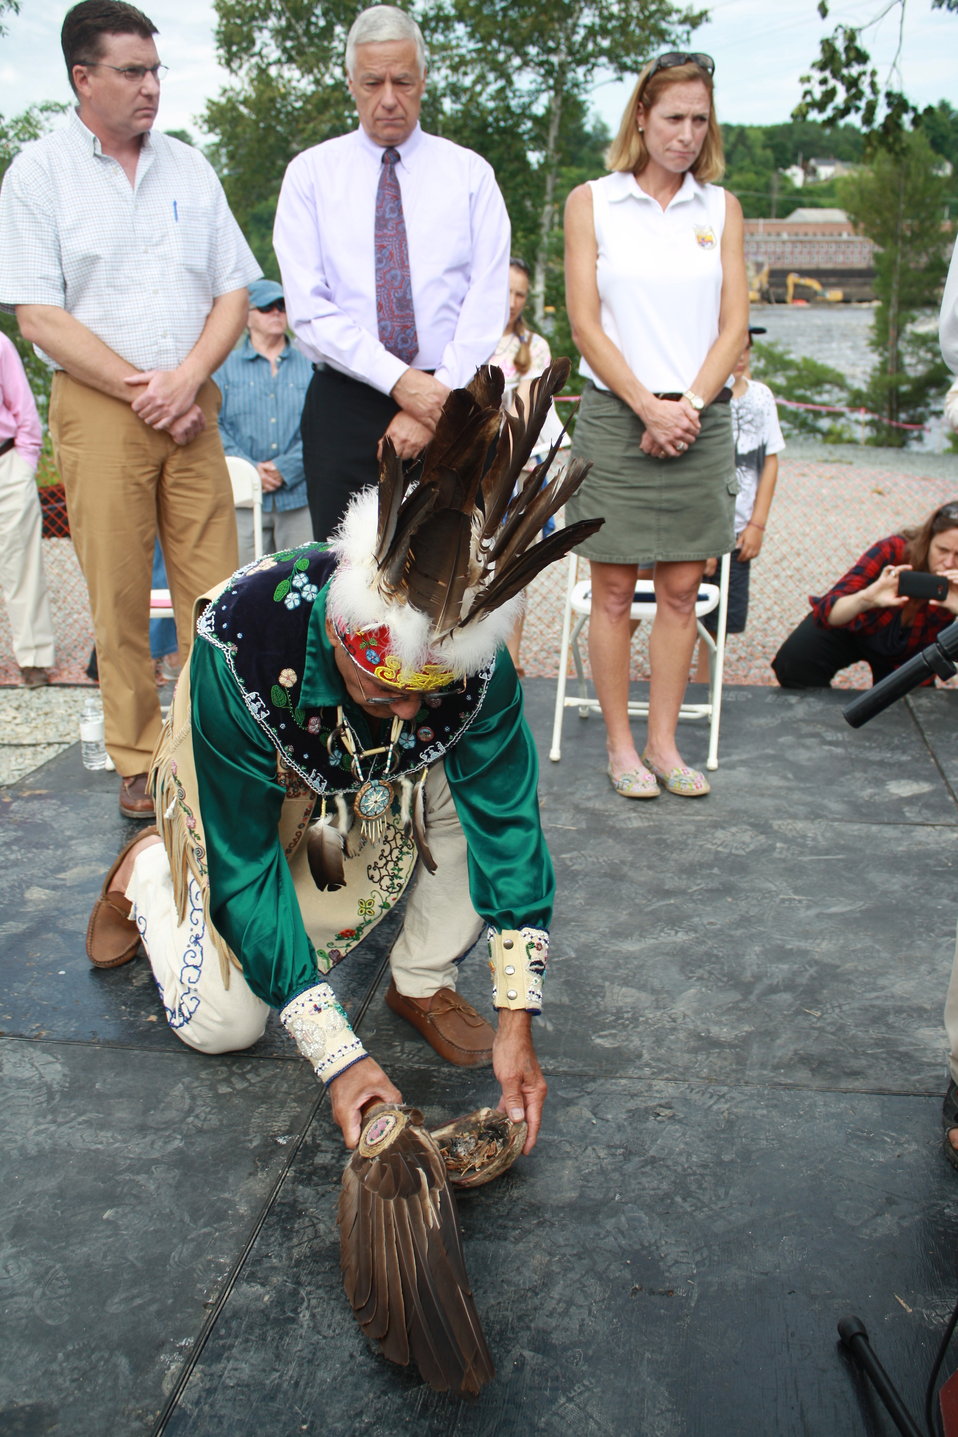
Veazie Dam Removal

Pat Keliher, Commissioner of the Maine Department of Marine Resources, U.S. Congressman Mike Michaud and U.S. Fish and Wildlife Service Northeast Regional Director Wendi Weber stand behind Penobscot Indian Nation Elder Butch Phillips.